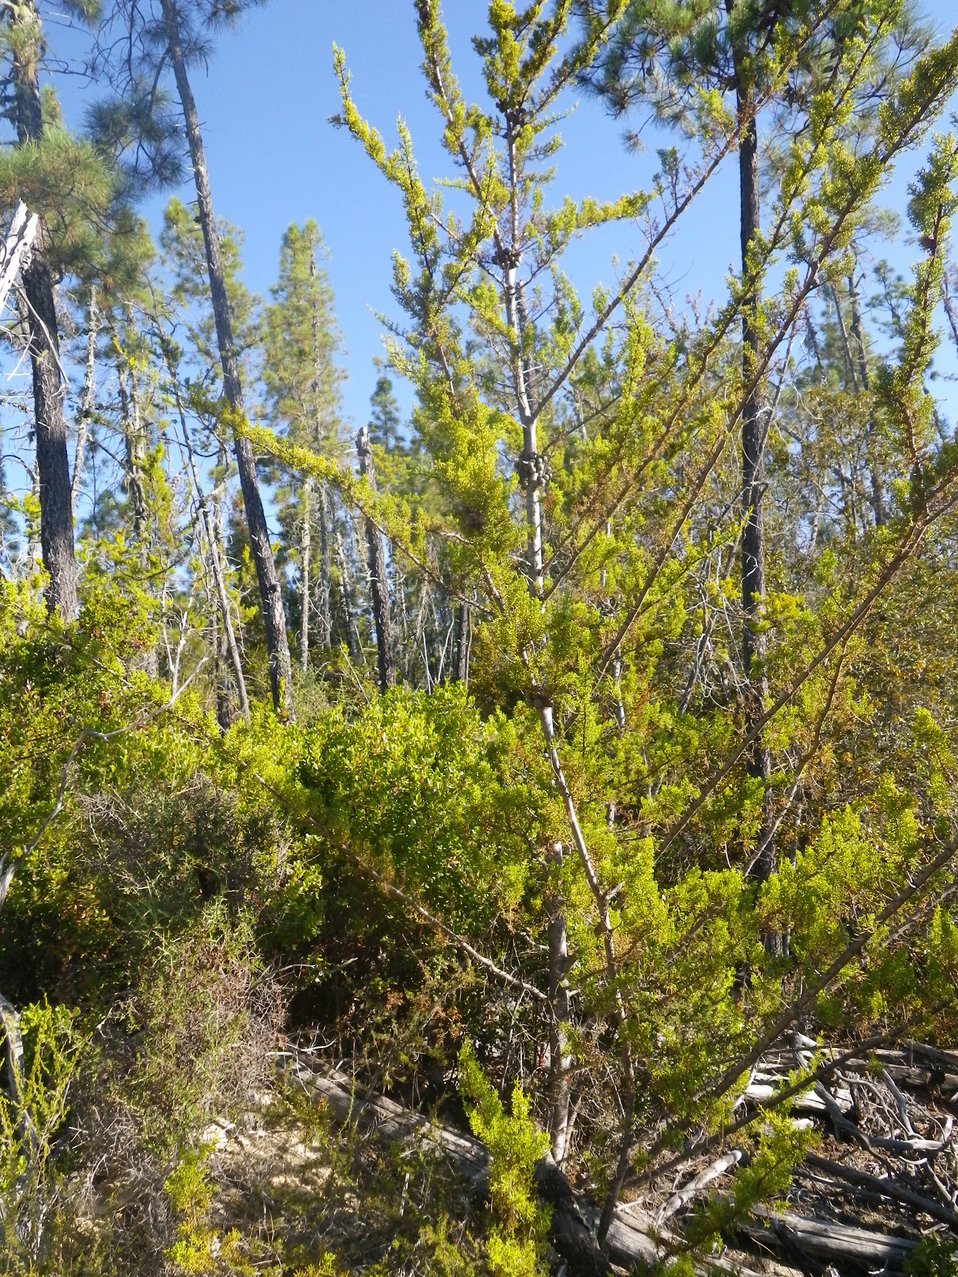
Santa Cruz Cypress and Habitat

This Santa Cruz cypress (Hesperocyparis abramsiana) stand is part of the Majors Creek population located in Santa Cruz County, California. It occurs in patches within a mosaic of coastal chaparral and mixed evergreen forests located on dry ridges inland from the coastal fog belt.